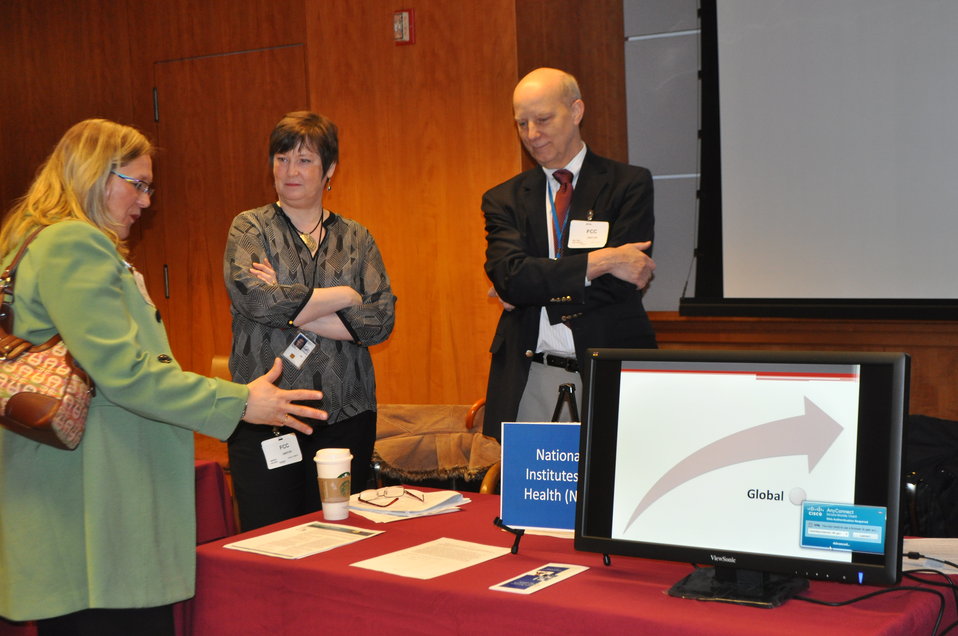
12.6.13 mHealth Innovation Expo

FCC mHealth Innovation Expo.